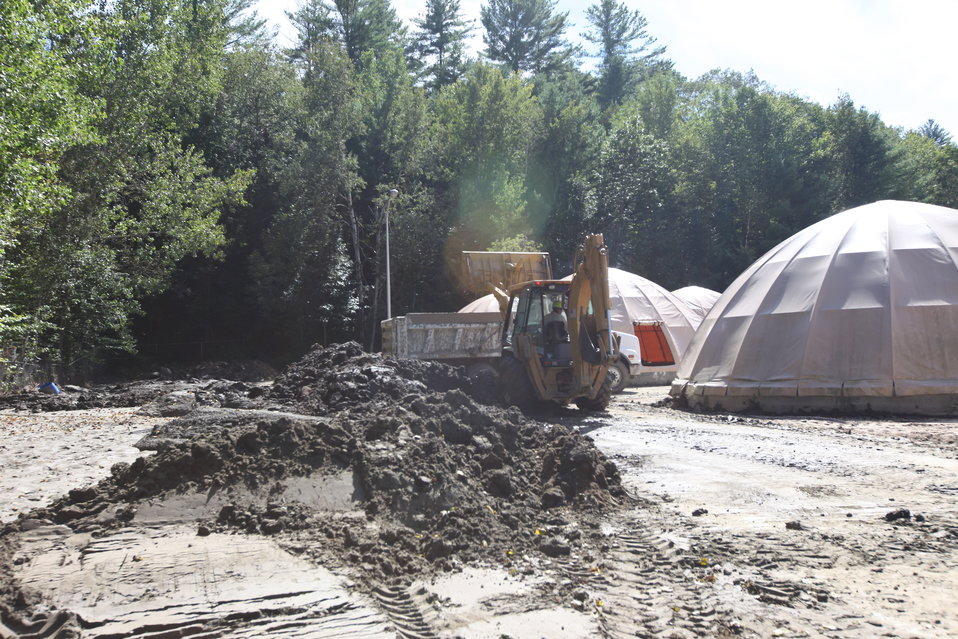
Storm damage relief at White River NFH

Heavy equipment operators came from other USFWS stations to help clean up.